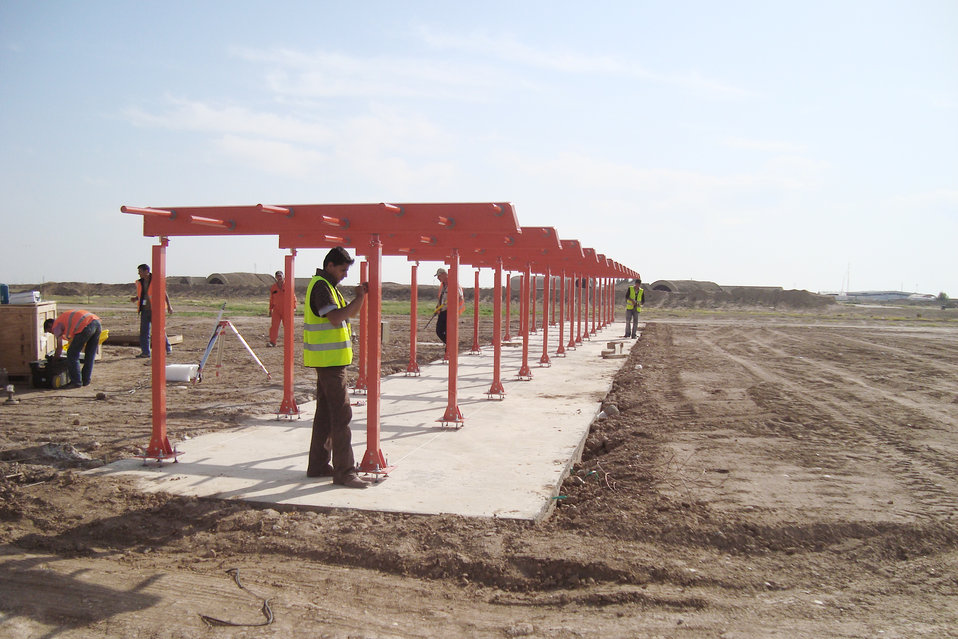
Transfer of navigational aids to Iraqi air force

A contractor works on installation and adjustment of the antenna subsystem for a runway localizer antenna, one of many pieces of equipment officially turned over to the Iraqi air force during a ceremony Oct. 26, 2009, at Kirkuk Air Base. The Electronic Systems Center, headquartered at Hanscom AFB, Mass., provided the equipment via foreign military sales procedures.